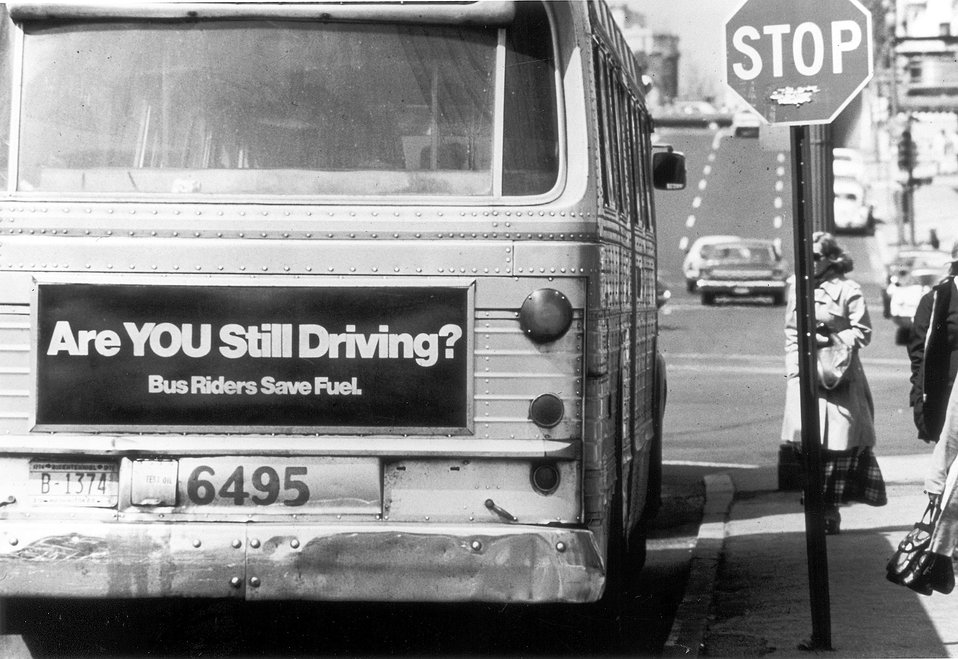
City bus with conservation message